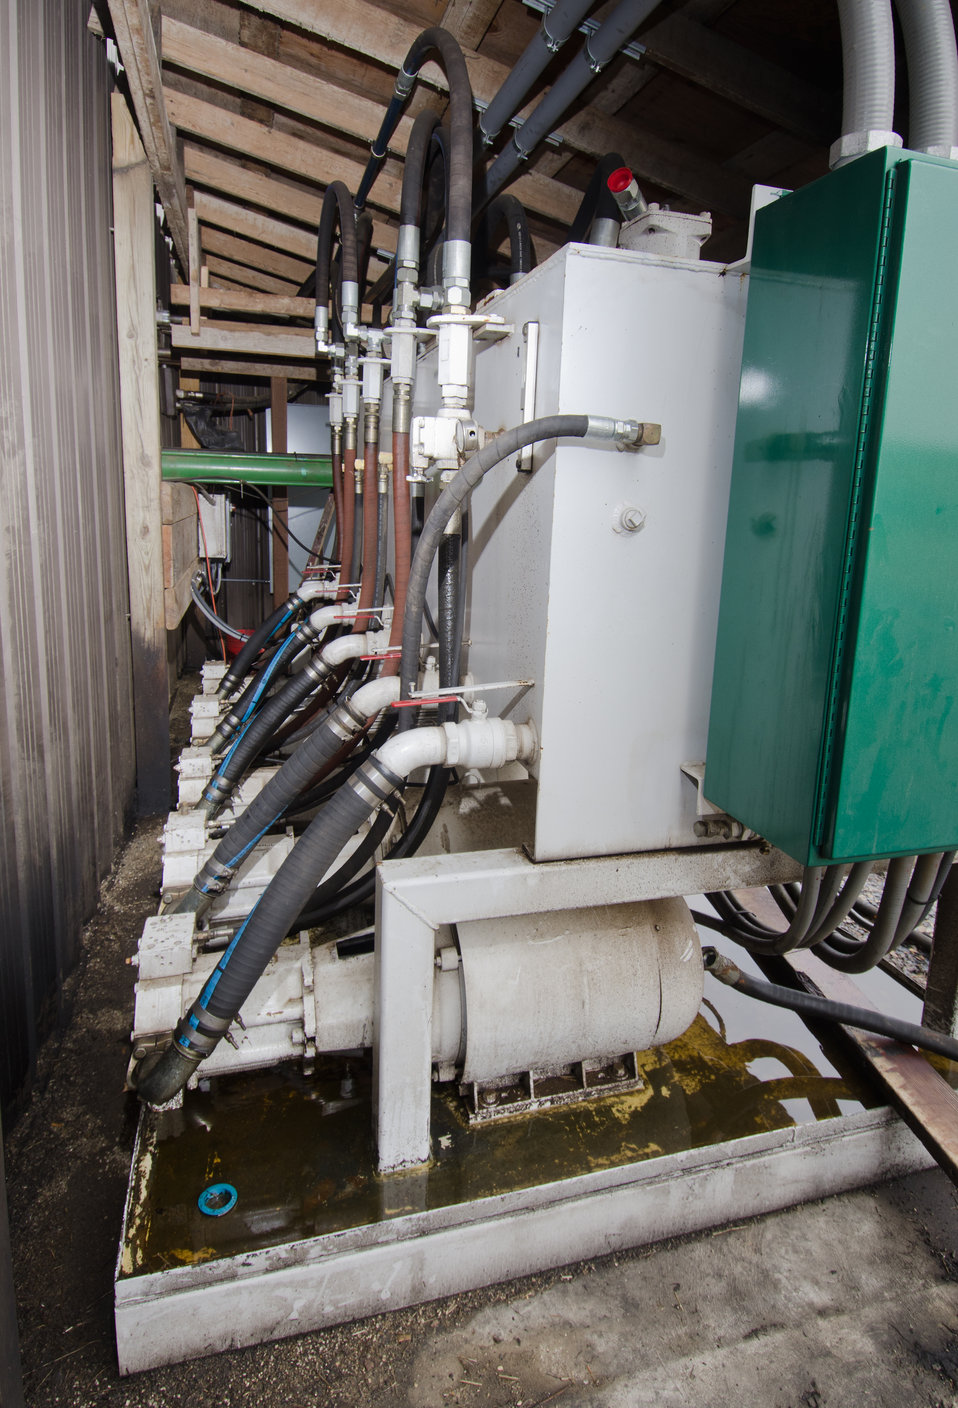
Electric motors replaced diesel engines at Heidel Hollow Farms a family owned farm since 1852 and is currently an 1,800 acre operation in Germansville, PA on April 20, 2011. Led by President David Fink they mainly produce and compact hay for export; additionally they grow produce on 300 acres for local sale within a 40-mile radius. With the financial help of the U.S. Department of Agriculture (USDA) the hay compactor’s diesel engines were replaced with clean low-maintenance, low operating cost electric motors (seen under the hydraulic fluid sump tank), drive the pumps for the compactor's hydraulic system. The compactor increases the density of baled hay by two and half times for more efficient shipping to overseas customers.